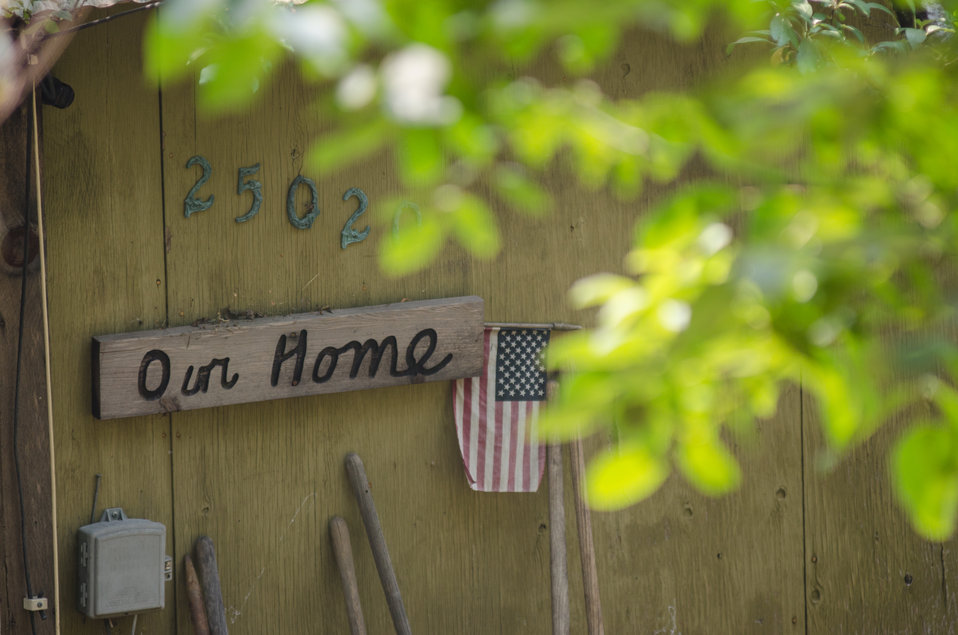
The community of Sawyers Bar, CA, on Wednesday, Aug. 6, 2013. Salmon River Complex Fire is northwest of Sawyers Bar and west of Etna and Yreka, CA in the Klamath National Forest.